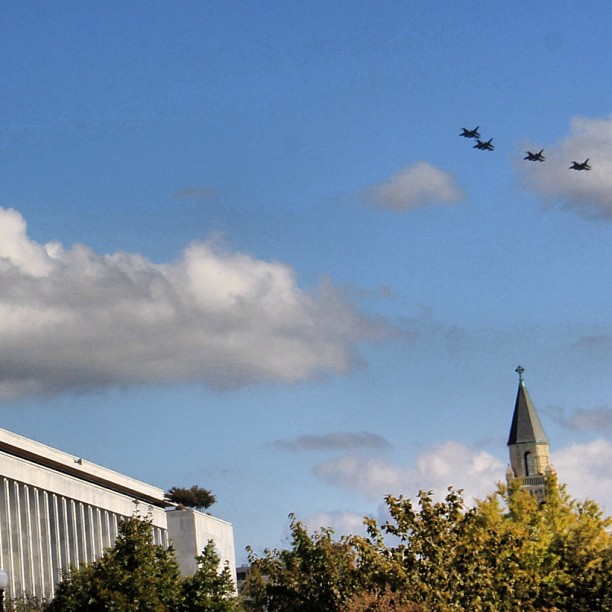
F-16s fly over Madison Bldg @librarycongress & Capitol Hill. #natitude